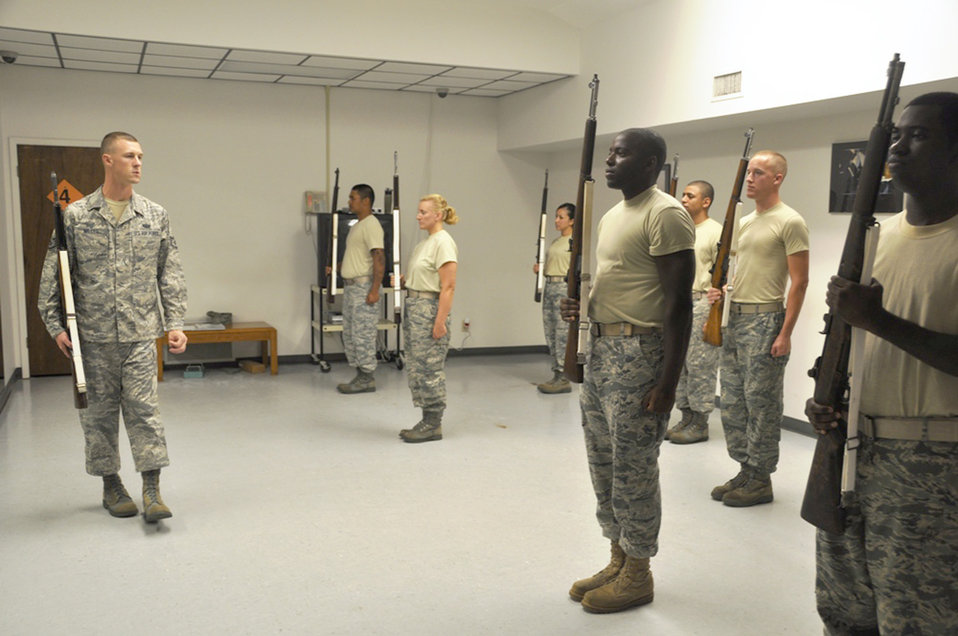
USAF Honor Guard visits Tyndall AFB

Staff Sgt. Anthony Miller works with Tyndall Air Force Base Honor Guard Airmen to practice for active-duty funeral ceremonies July 21, 2010, at Tyndall AFB, Fla. Airmen participated in a week-long training course to improve their skill and give them the ability to teach others. Sergeant Miller is a visiting United States Air Force Honor Guard instructor.